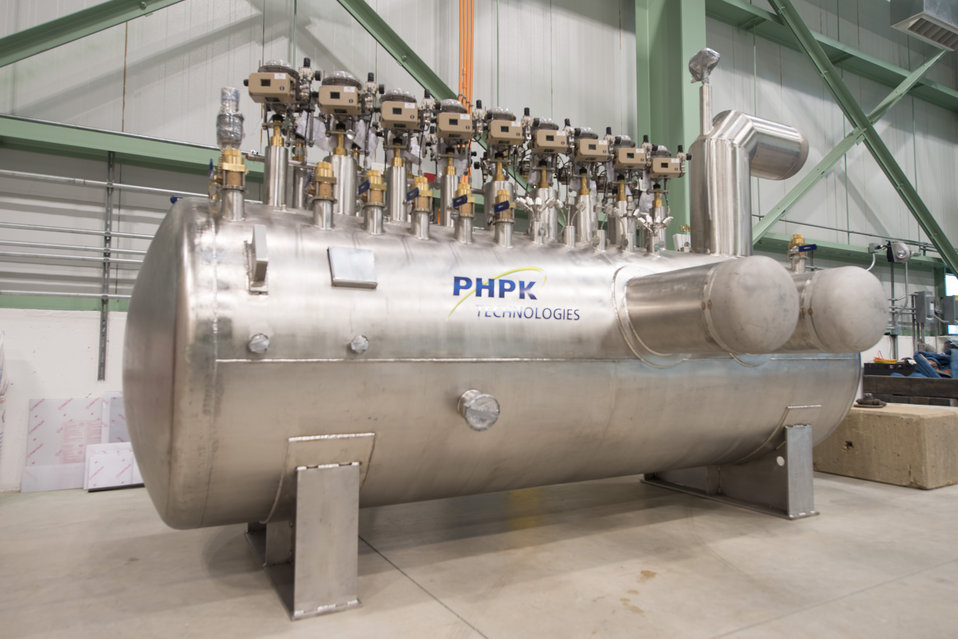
Crymodule Test Facility (CMTF) distribution box for cryogenic systems at Fermi National Accelerator Laboratory.

The CMTF house radiofrequency systems and a cryogenic plant, crucial components for testing superconducting radio-frequency cavities for the SRF Accelerator Test Facility at the new Muon Lab.